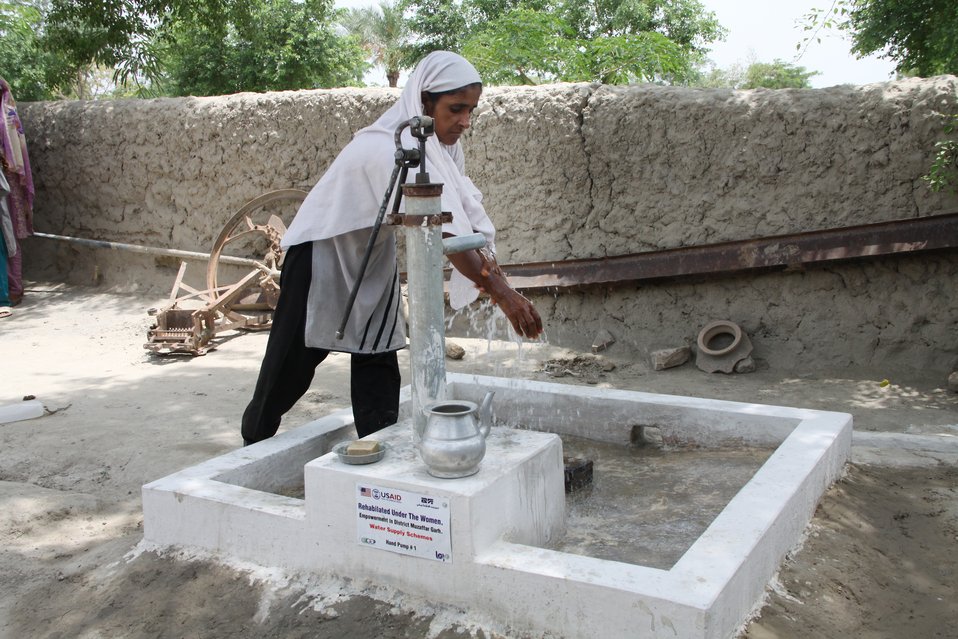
Handpumps installed in flood affected areas District Mianwali Punjab

GENDER EQUITY PROGRAM